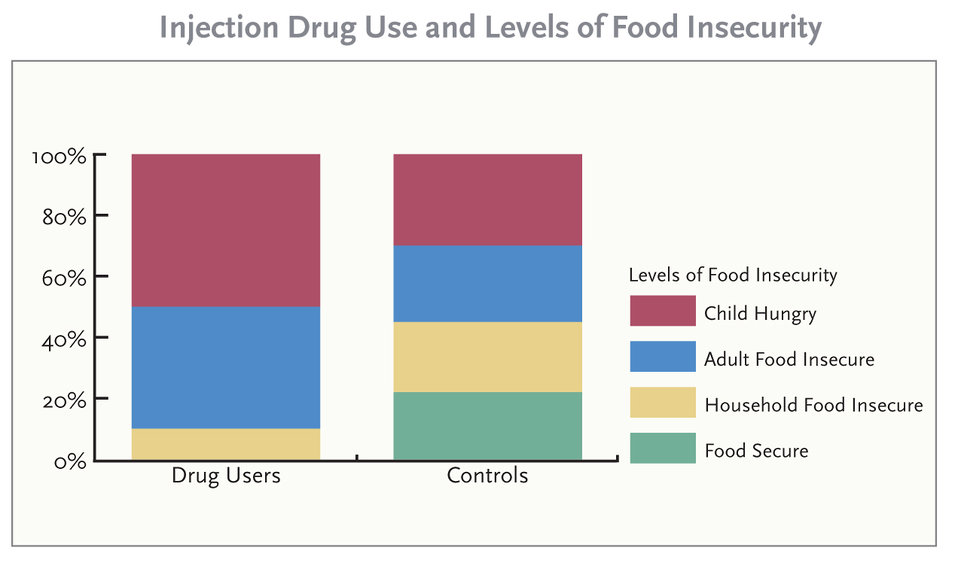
Chart

Injection drug use and levels of food insecurity